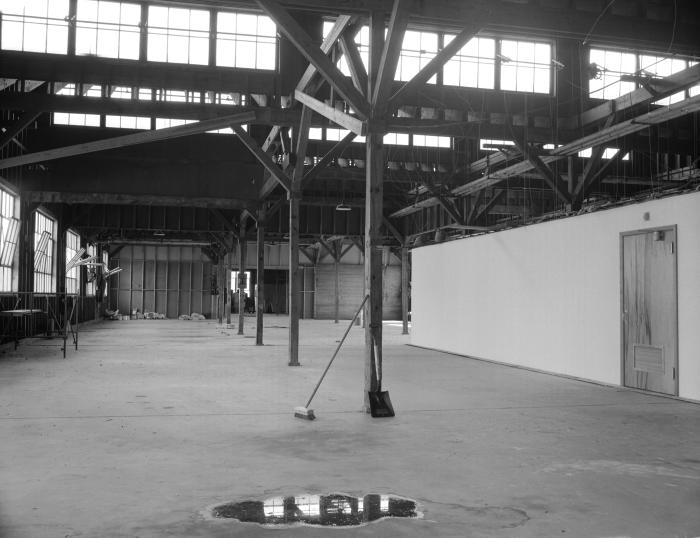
This 1957 photograph showed the interior of the Centers for Disease Control's Lawson Building #5, located on the organization's Chamblee Campus.